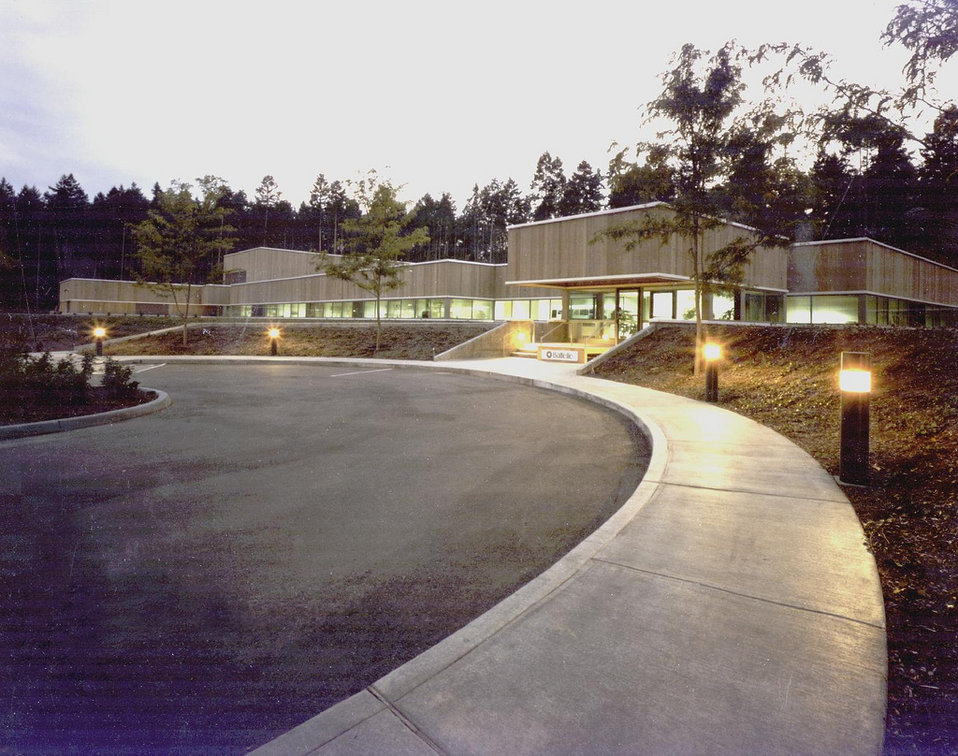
Pacific Northwest National Laboratory's Marine Sciences Laboratory, located on the Seqium Bay in Washington's Puget Sound.
The lab offers capabilities in ecotoxicology, analytical chemistry, wetland and coastal ecology, fisheries, ocean processes, instrumentation/remote sensing, risk assessment, and biotechnology/remediation.